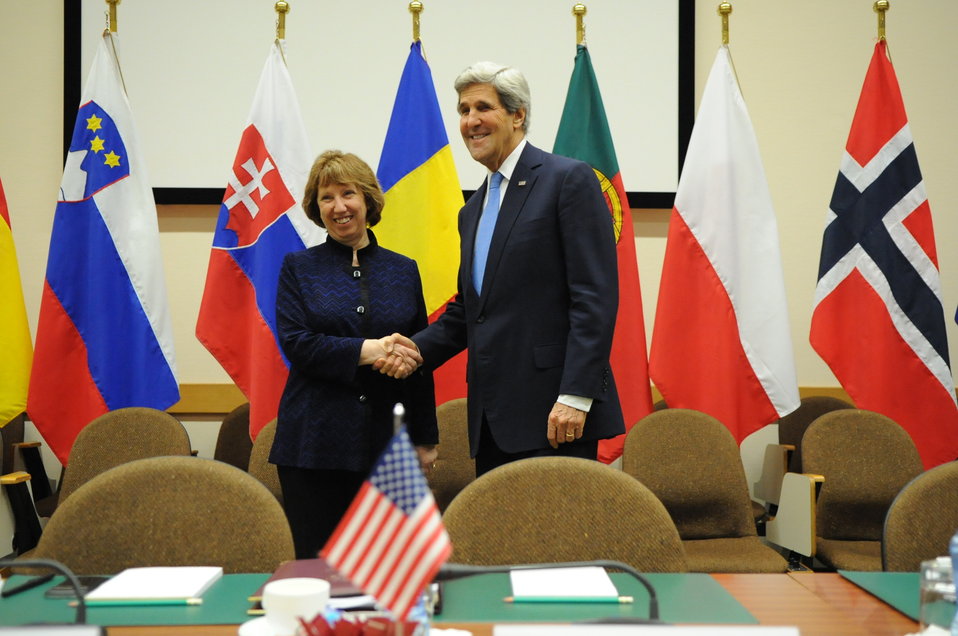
Secretary Kerry Meets With EU High Representative Ashton

U.S. Secretary of State John Kerry shakes hands with European Union High Representative Catherine Ashton before a meeting at NATO Headquarters in Brussels, Belgium, on December 4, 2013.